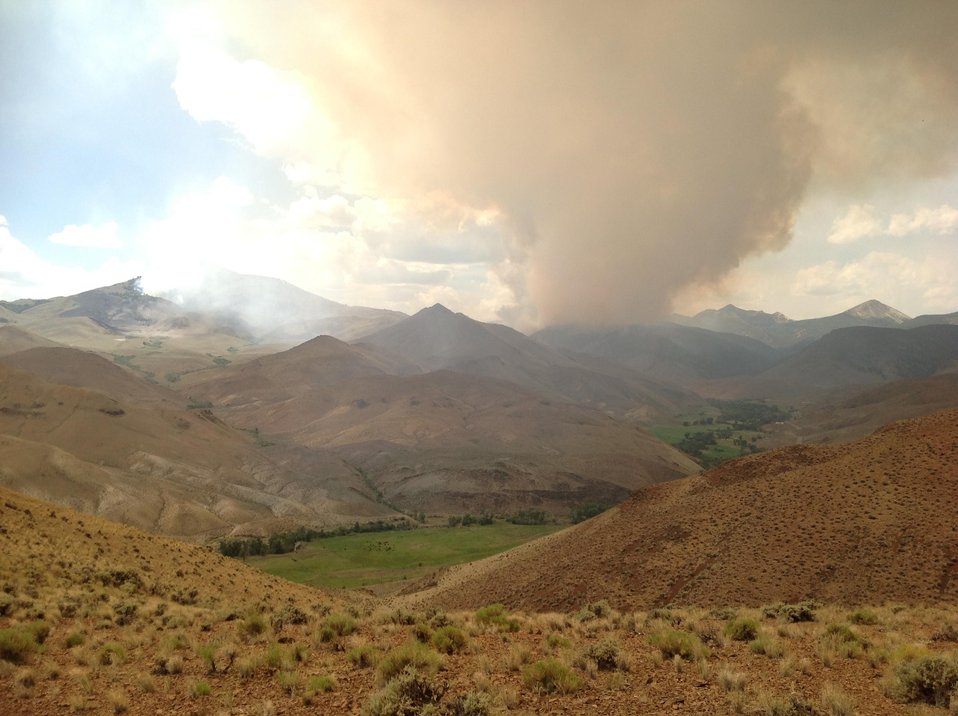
The Lodgepole Fire in the Salmon-Challis National Forest near Challis, ID began on Jul. 20, 2013 by lightning has consumed approximately 13,700 acres and is approximately 15% contained.